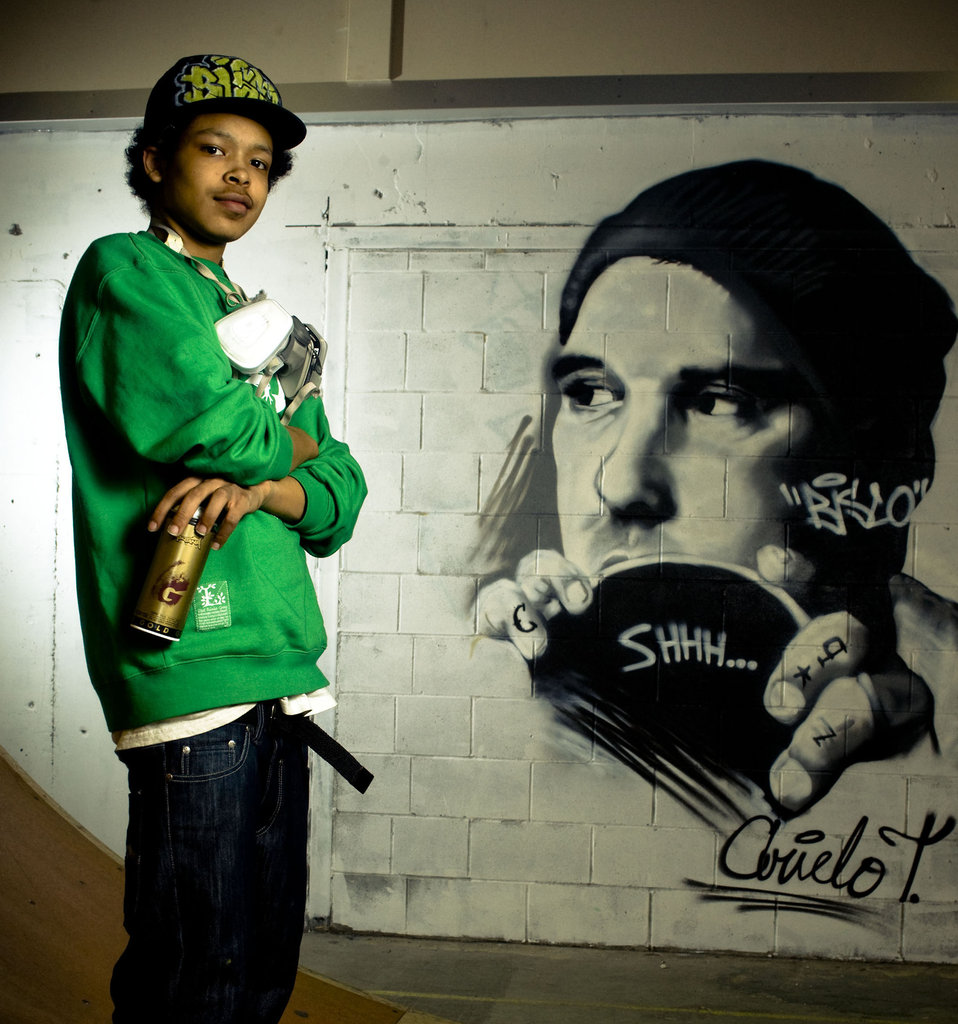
It's not graffiti, it's art

Arielo Taylor stands in front of his work at the skate park inside the base community center April 3 at Elmendorf Air Force Base, Alaska. Mr. Taylor helped Staff Sgt. Art Delafuente decorate the skate park with graffiti.